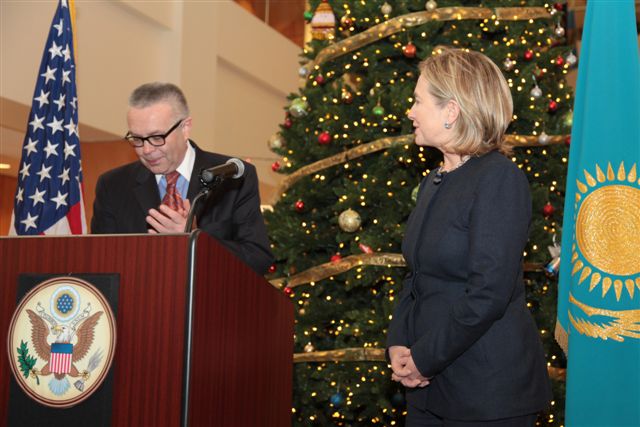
Ambassador Hoagland Introduces Secretary Clinton

U.S. Ambassador to Kazakhstan Richard E. Hoagland introduces U.S. Secretary of State Hillary Rodham Clinton in Astana, Kazakhstan, on December 1, 2010.